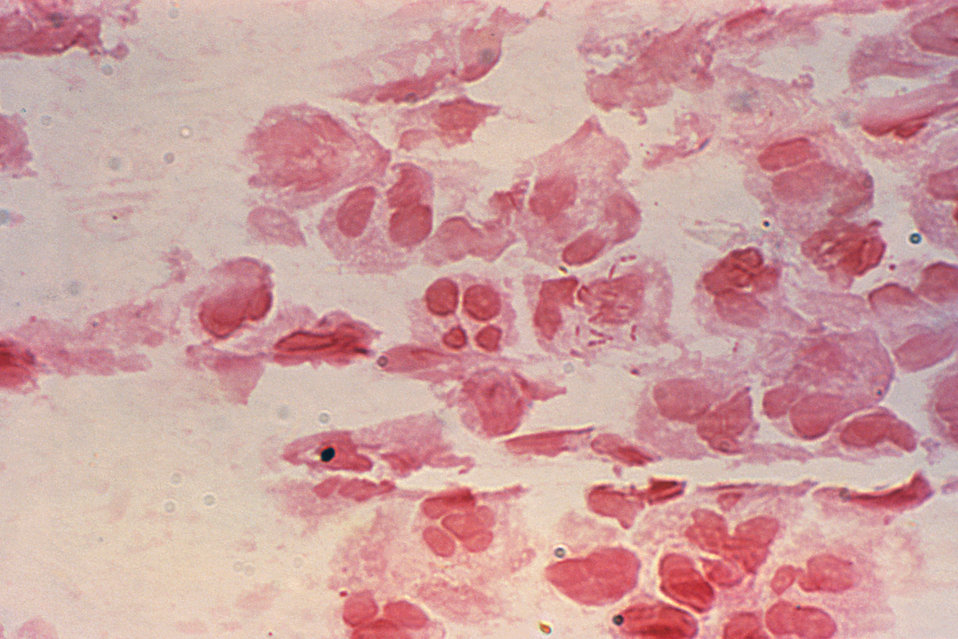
Examination of this urethral discharge for Neisseria gonorrhea revealed Gram-negative intracellular rods, NOT diplococci.